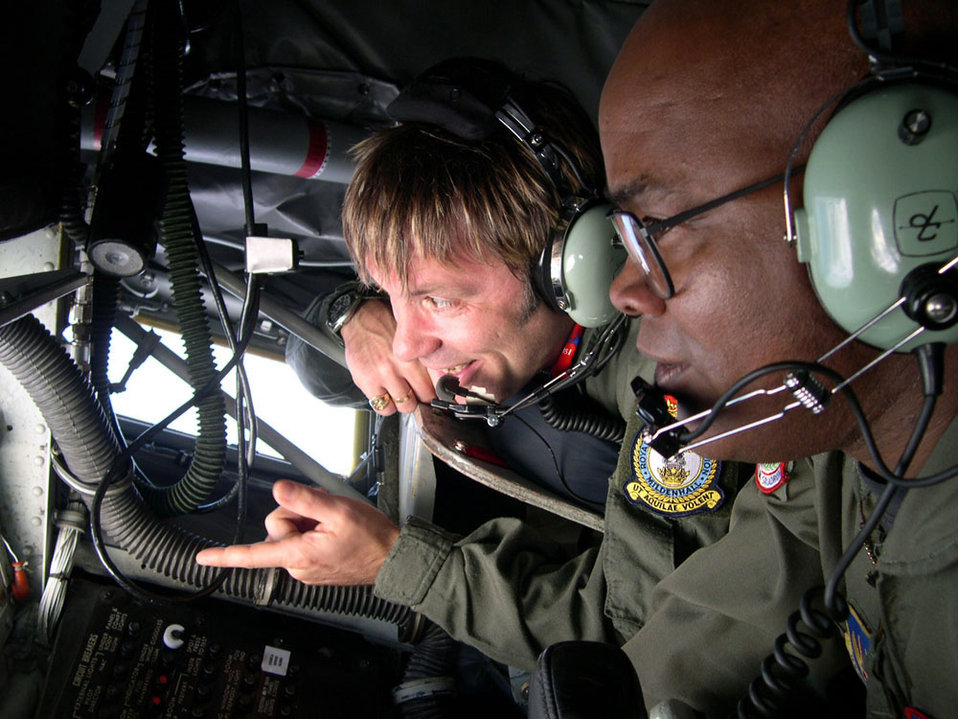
A 'Maiden' voyage

ROYAL AIR FORCE MILDENHALL, England -- Bruce Dickinson (left) talks with Senior Master Sgt. Milton Griggs during a KC-135 Stratotanker flight Oct. 25. Mr. Dickinson is lead singer of the heavy metal band Iron Maiden and also a commercial airline pilot. He is the host of a five-part series for the Discovery Channel titled,